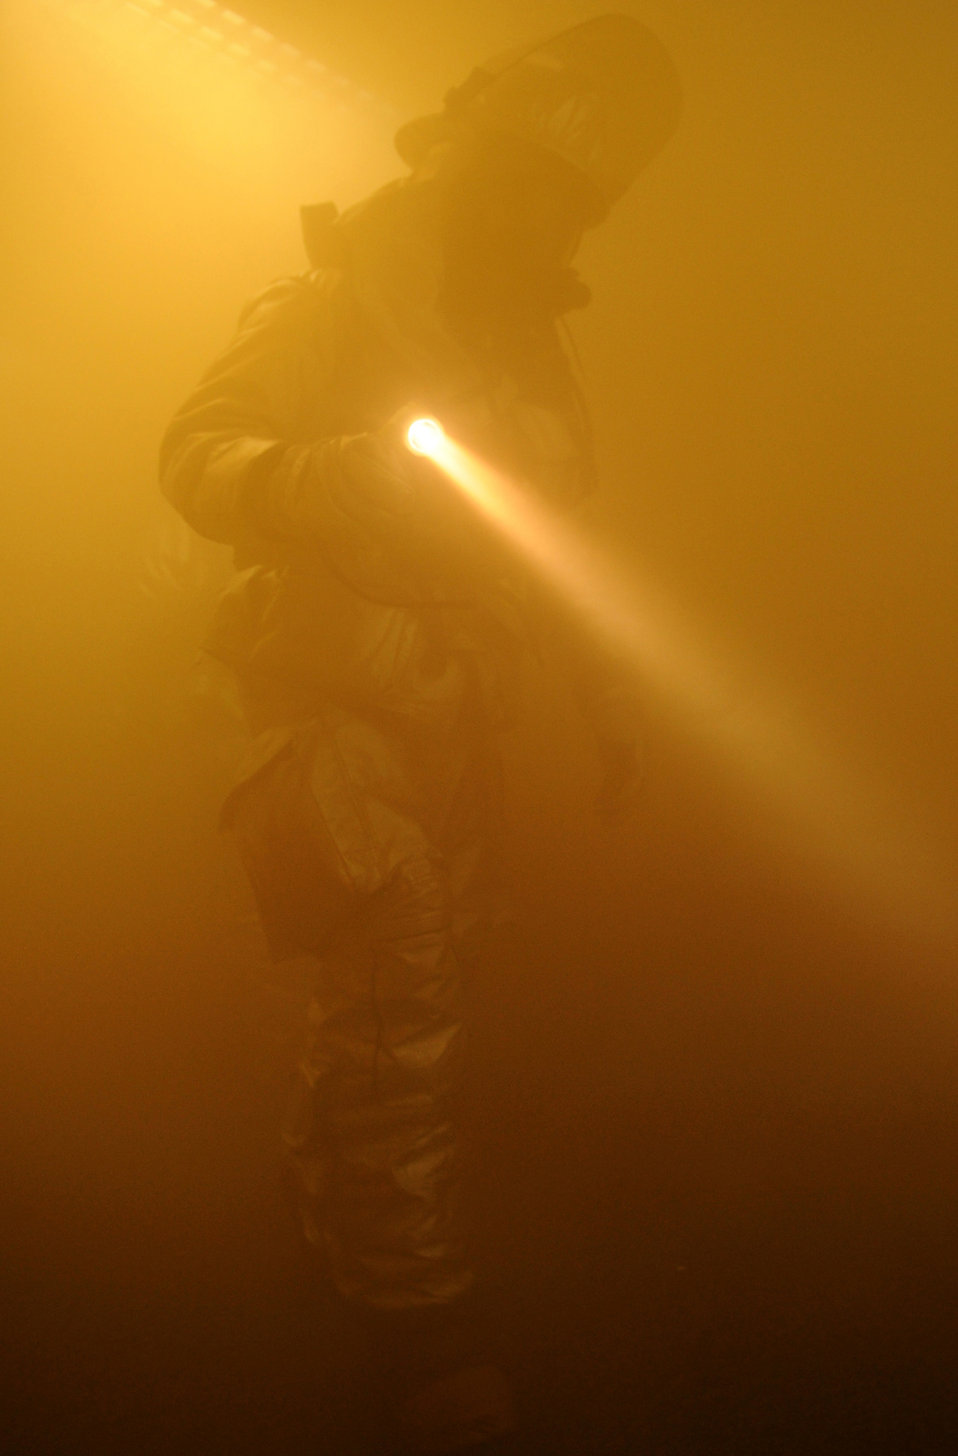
Firefighter! Anyone here?

A firefighter from the 886th Civil Engineer Squadron responds to a 'building fire' Aug. 28, 2010, during an operational readiness exercise at Ramstein Air Base, Germany. An ORE incorporates a series of scenarios to evaluate a base's ability to execute operational duties under simulated wartime conditions.